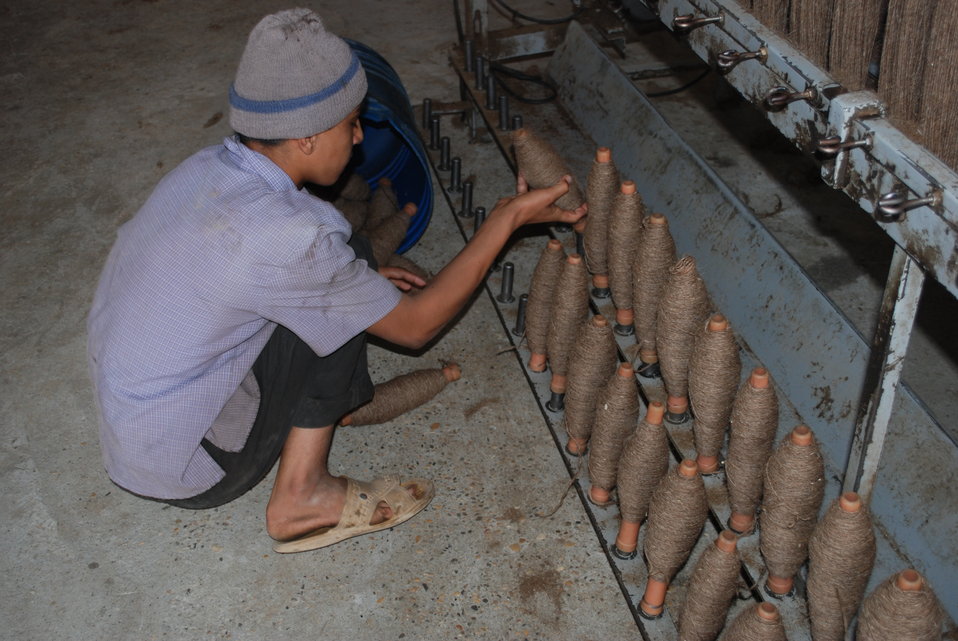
'On the Road' in Balkh Province